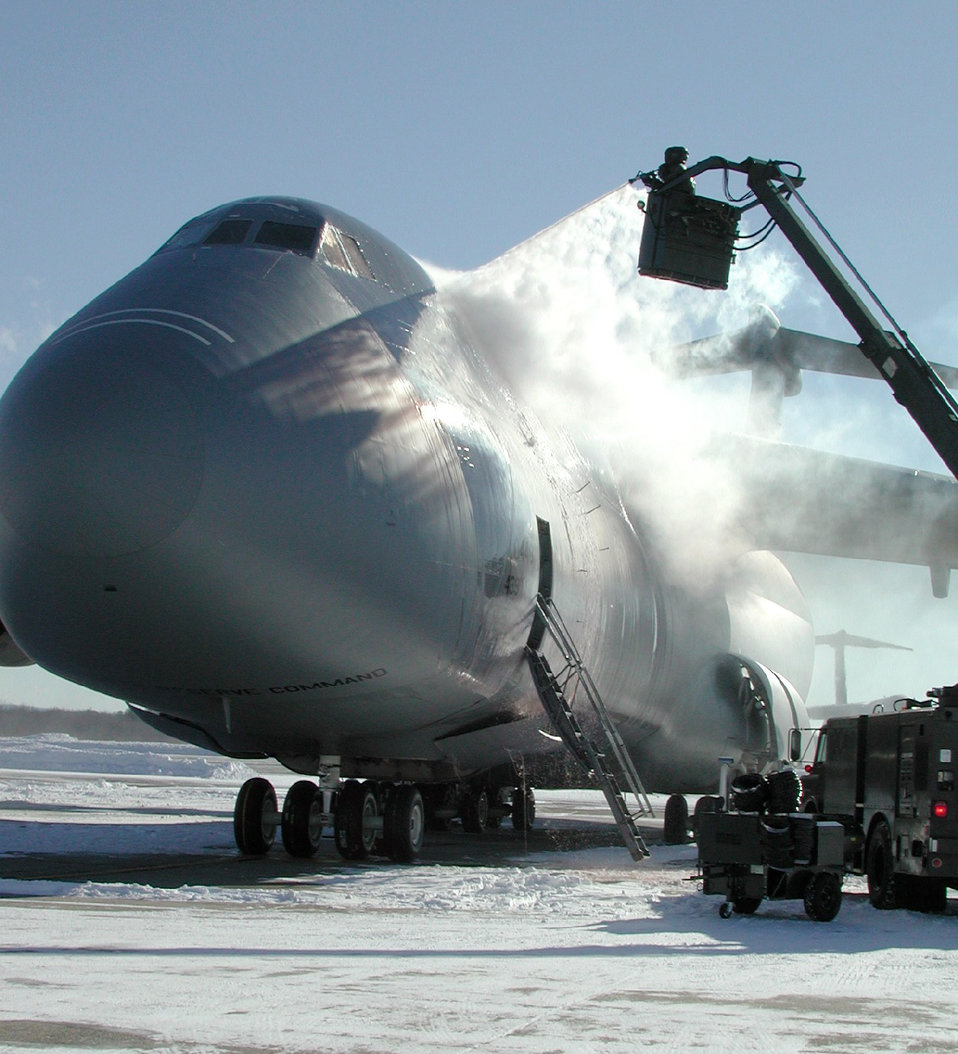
Ice not so nice

WESTOVER AIR RESERVE BASE, Mass. -- Tech. Sgt. Michael Vogt de-ices a C-5 Galaxy before a flight. A New England cold snap unloaded more than a foot of snow here. Sergeant Vogt is assigned to the 439th Aircraft Maintenance Squadron.